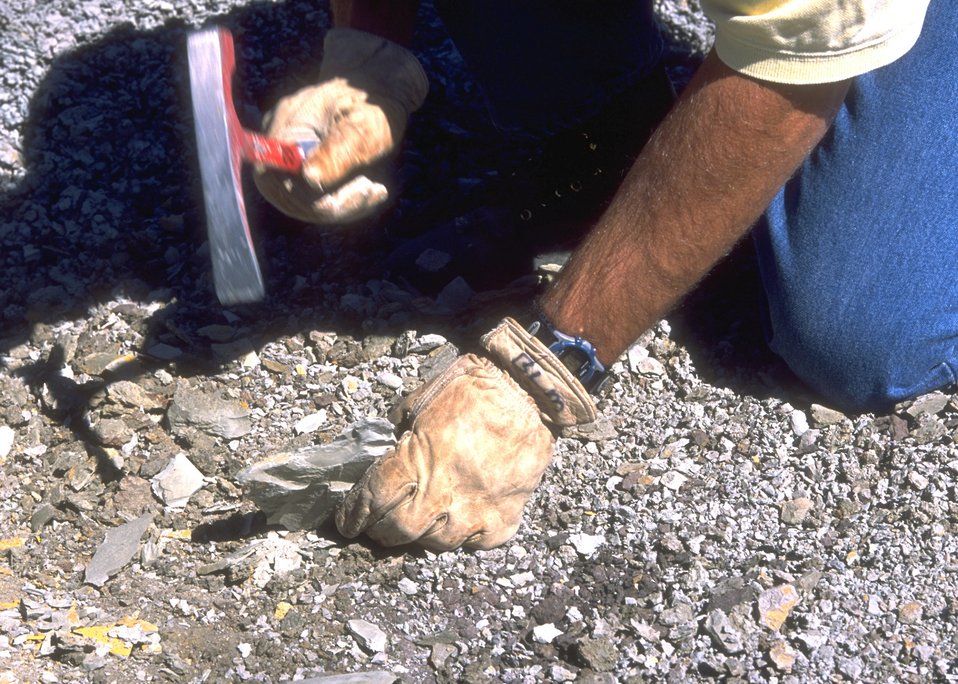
Dave Baker, WFO, examining fossils at the Cedar Ridge Paleo area, Lander Field Office.